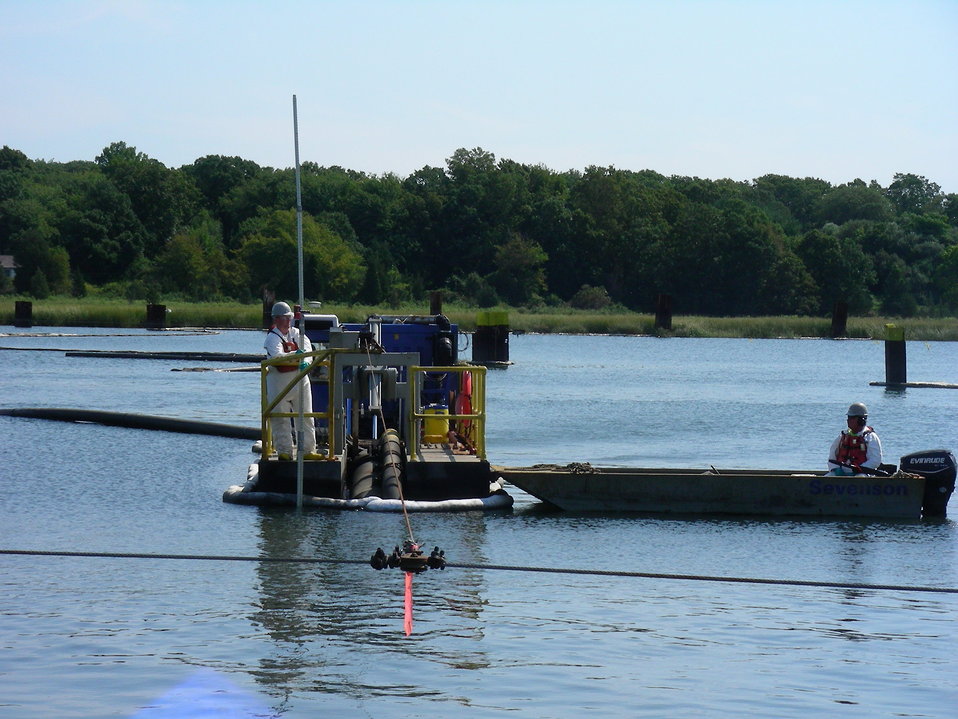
August 2012, Up close to a dredge New Bedford Harbor, MA

Cables keep the dredges on course. To help each of the dredges stay on track, a series of cables guide each dredge as it winches itself back and forth while sucking up contaminated sediment below.

To the right of the worker in white tyvek, there are two black pipes extending into the water. These are the suction lines leading to the dredge's cutterhead. Contaminated sediments are agitated through the rotating cutterhead and are sucked through the black floating pipeline behind the dredge for processing on shore.